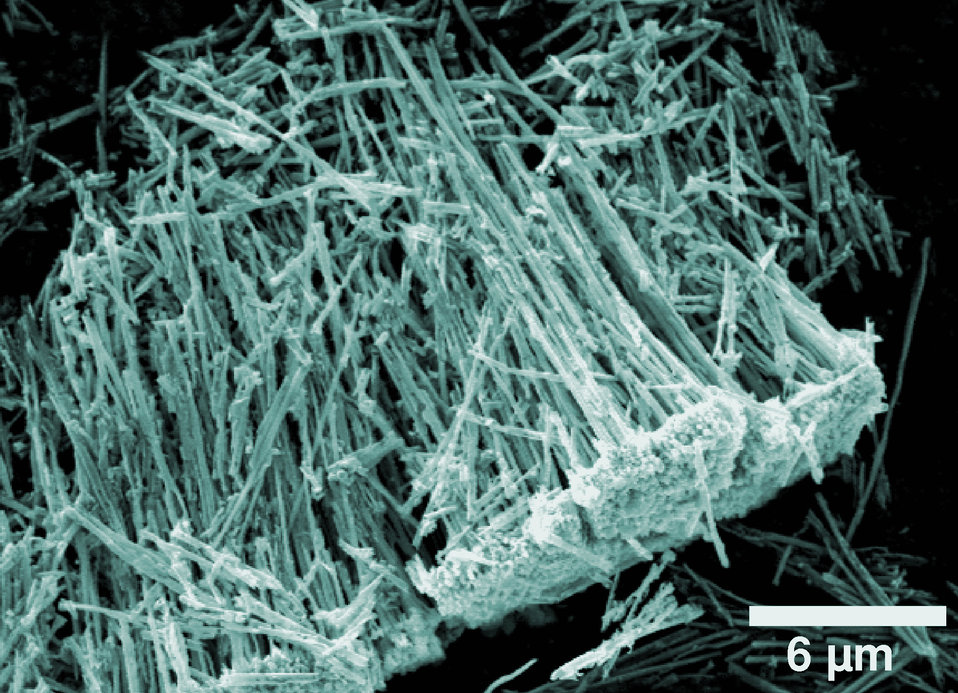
Metal-oxide nanotubes

NIST researchers have developed a new technique to form nanotubes for use in gas sensing applications. One hundred to 1,000 times more sensitive than comparable sensors, their device could be used to study biological cell stress and cell communication.